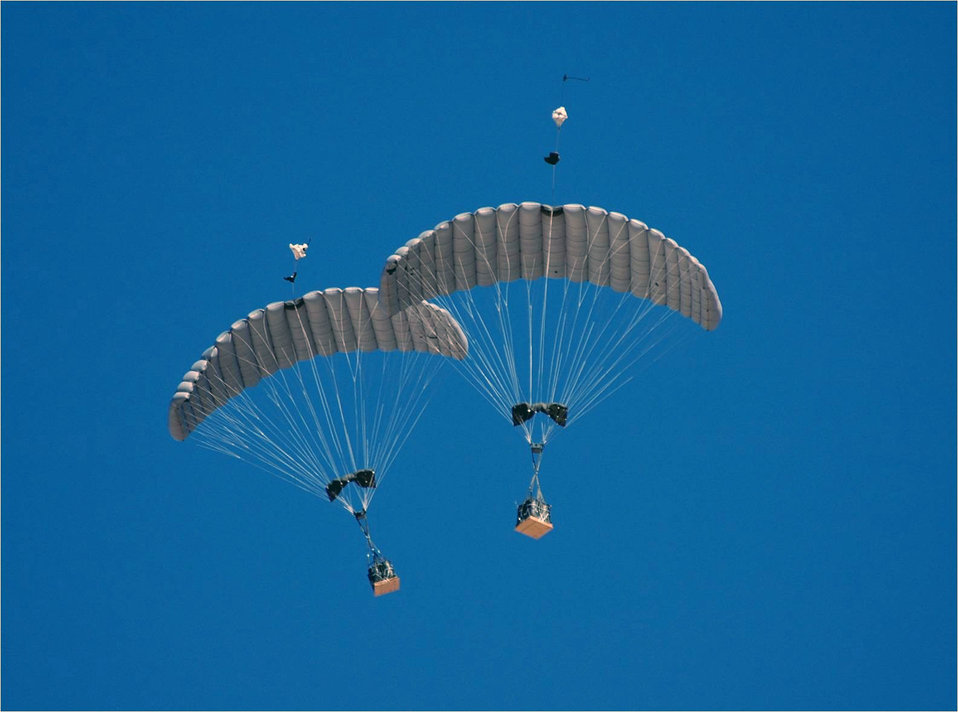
Joint team restores precision airdrop capability

The guided payload 2,200 pound weight class of the Joint Precision Airdrop System in flight during its first combat airdrop. A joint Air Force, Army and contract team recently corrected an accuracy issue with this variant of JPADS.